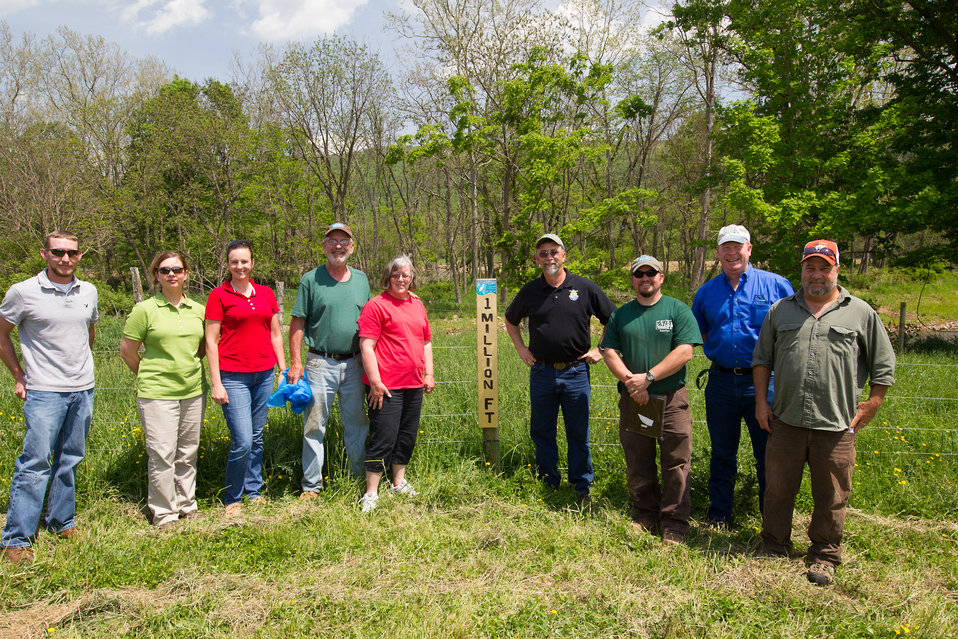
Celebrating 1 Million Feet of Conservation Fence in WV

Partners for Fish and Wildlife Program